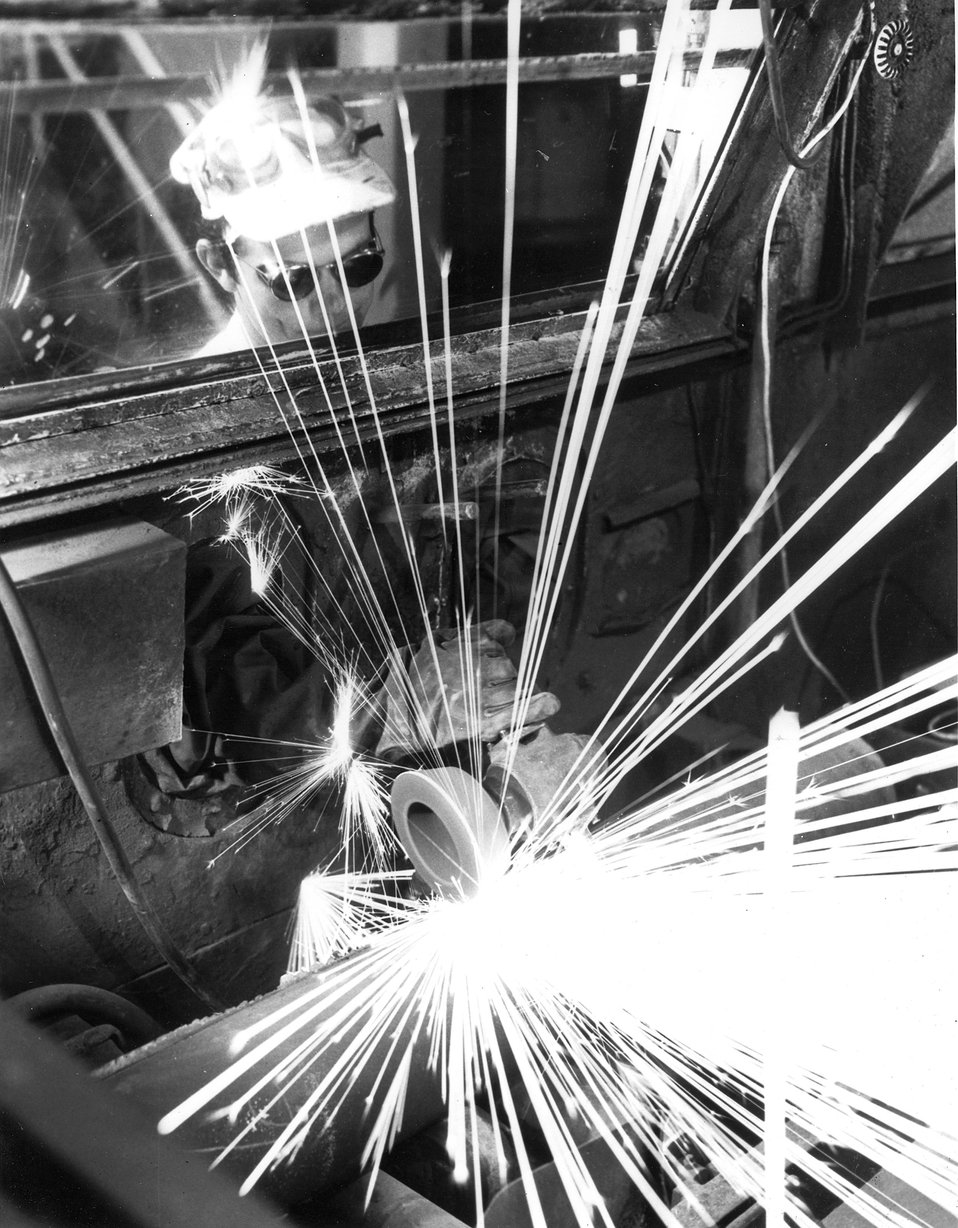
Grinding uranium ingots at the feed materials preparation plant near St. Louis, Missouri. c. 1961